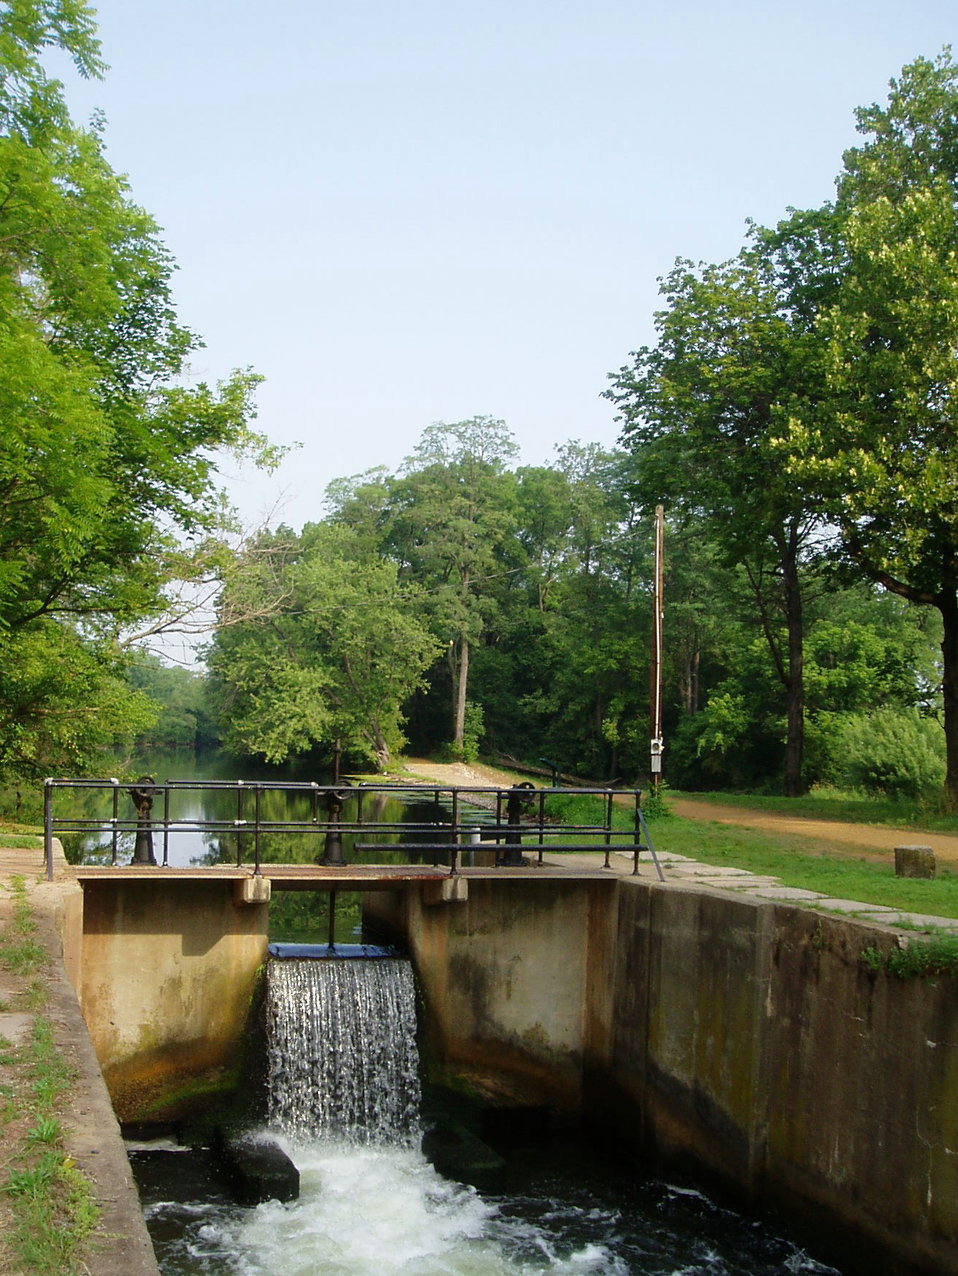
D&R Canal, Lock (2005)